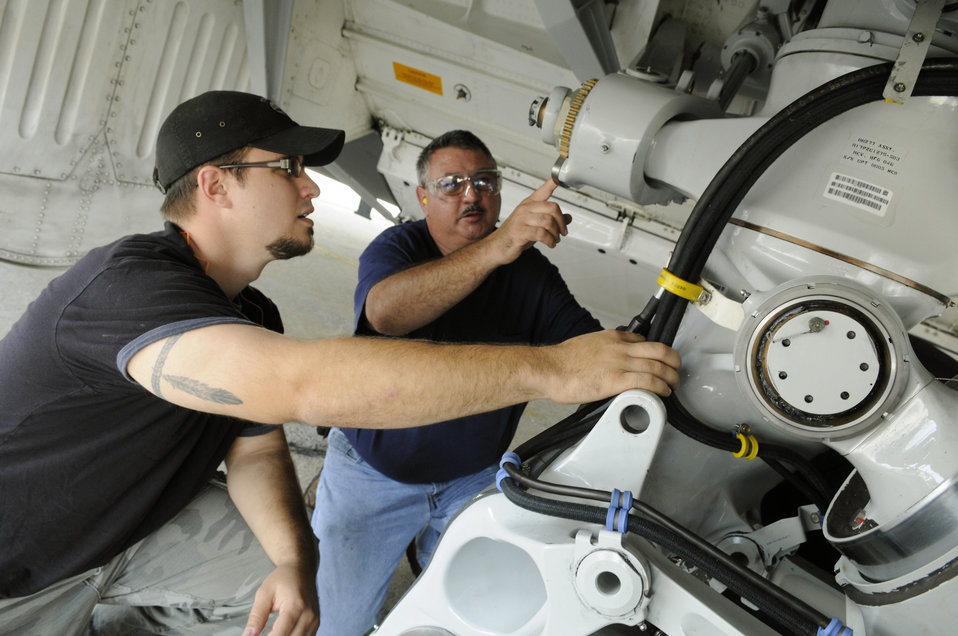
Multi-skill crew delivers first C-17 ahead of schedule

Jason Clements and Bill Hurst, aircraft mechanics at Robins Air Force Base, Ga., check the main landing gear of the first C-17 Globemaster III to undergo maintenance under the multi-skill system.